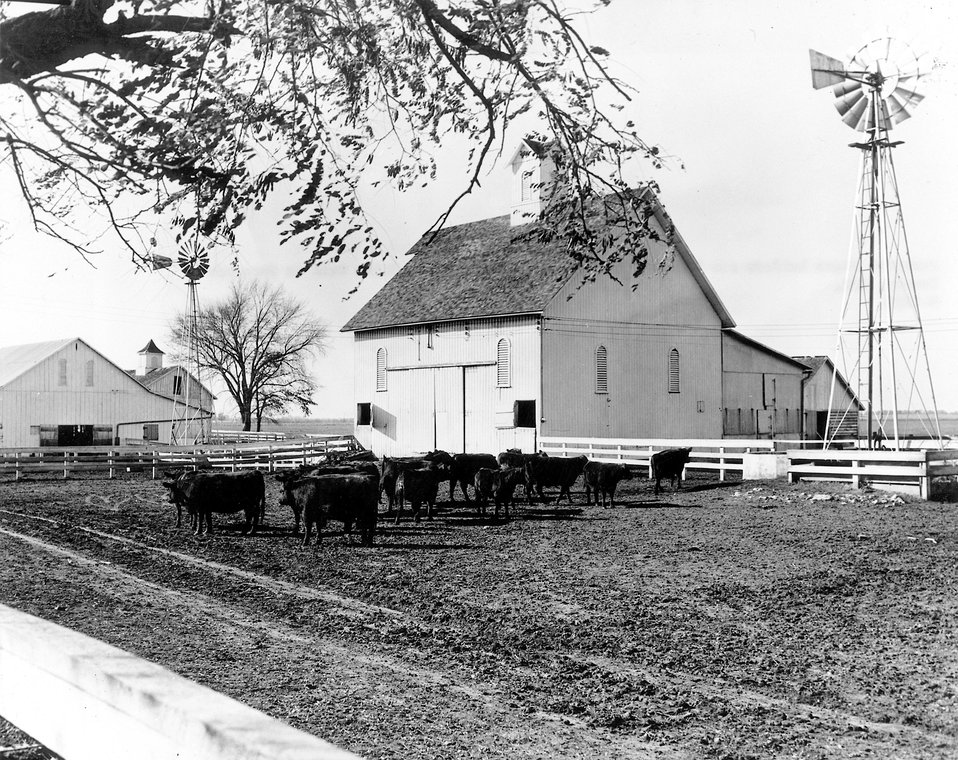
Multi-bladed windmills were once widely used to pump water on American farms. c. 1977